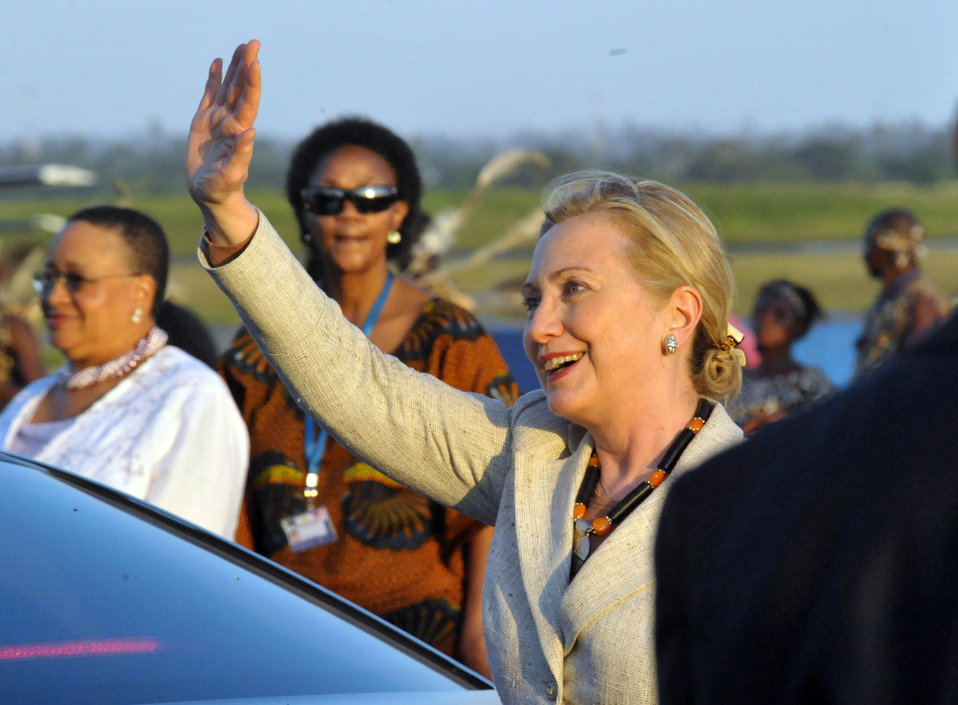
Secretary Clinton Waves Upon Her Arrival in Dar Es Salaam

U.S. Secretary of State Hillary Rodham Clinton waves upon her arrival in Dar es Salaam, Tanzania, on June 11, 2011.